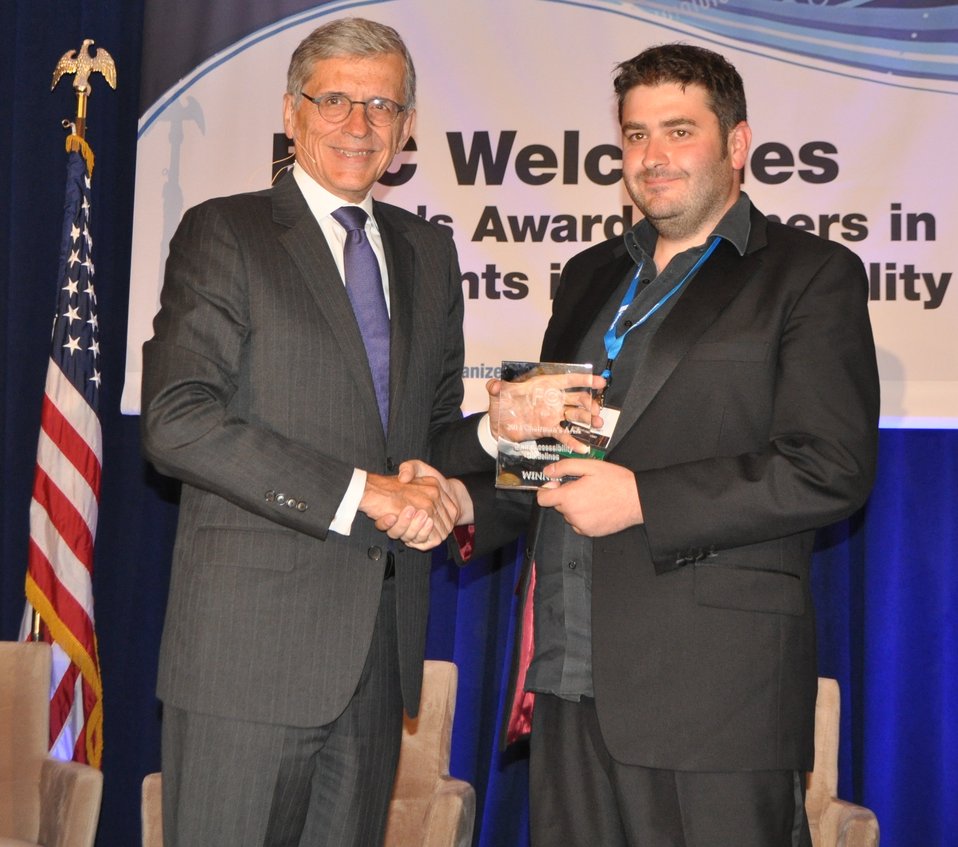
6.9.2014 Third Annual Chairman’s Awards for Advancement in Accessibility

Winner for the category of Mobile Web Browsers: Capti Narrator –developed by Charmtech Labs LLCDr: Yevgen Borodin accepting the award.